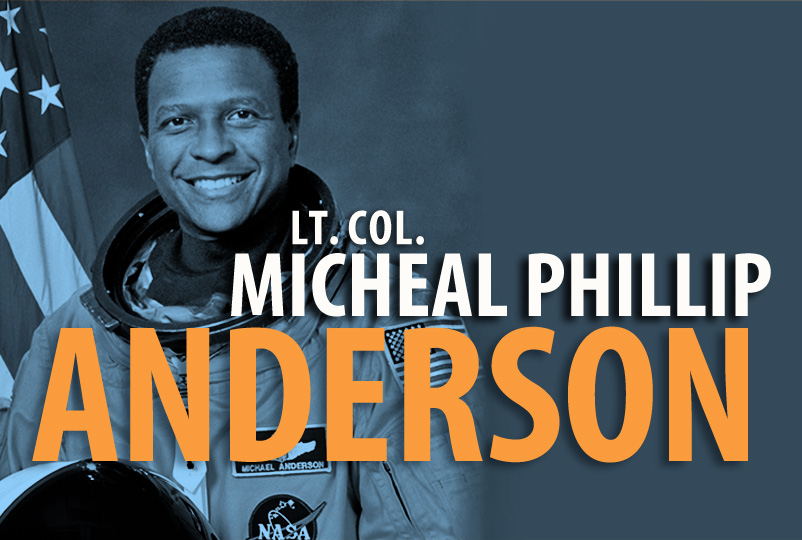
Lt. Col. Micheal Phillip Anderson